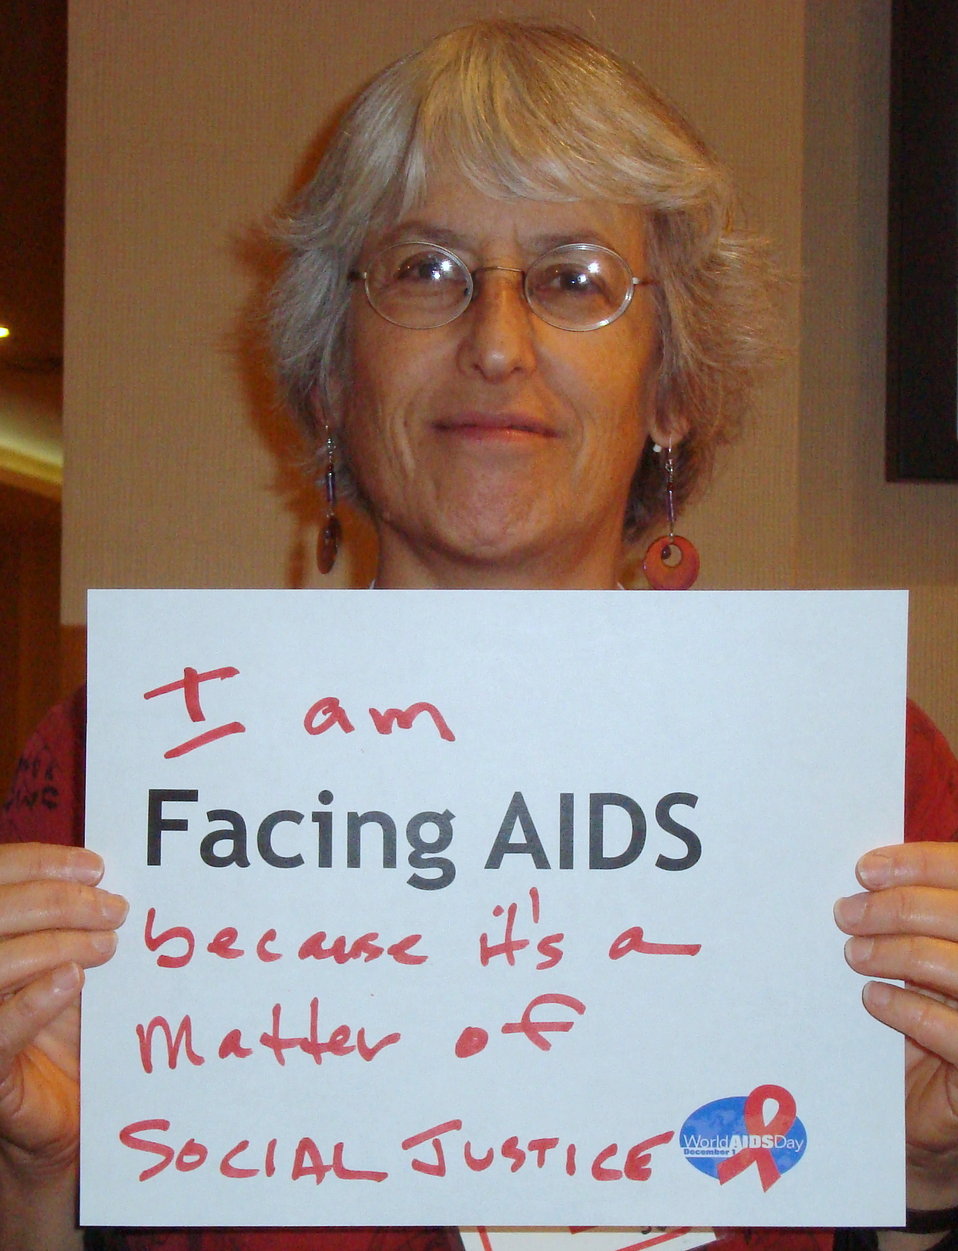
FacingAIDSCampaign 038